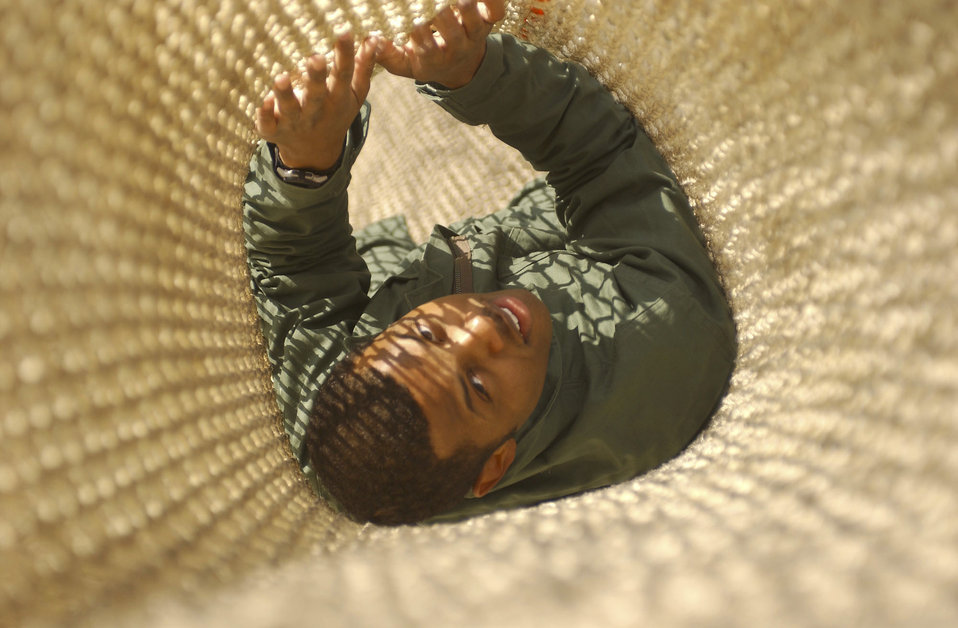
Nothin' but net

YOKOTA AIR BASE, Japan -- Airman 1st Class Marcus Levias looks up as he slides down the emergency escape net hanging outside the air traffic control tower during annual training here Jan. 22. Airman Levias is an air traffic controller with the 374th Operations Support Squadron. In case of an emergency, controllers would use the net if the stairs were blocked or damaged.